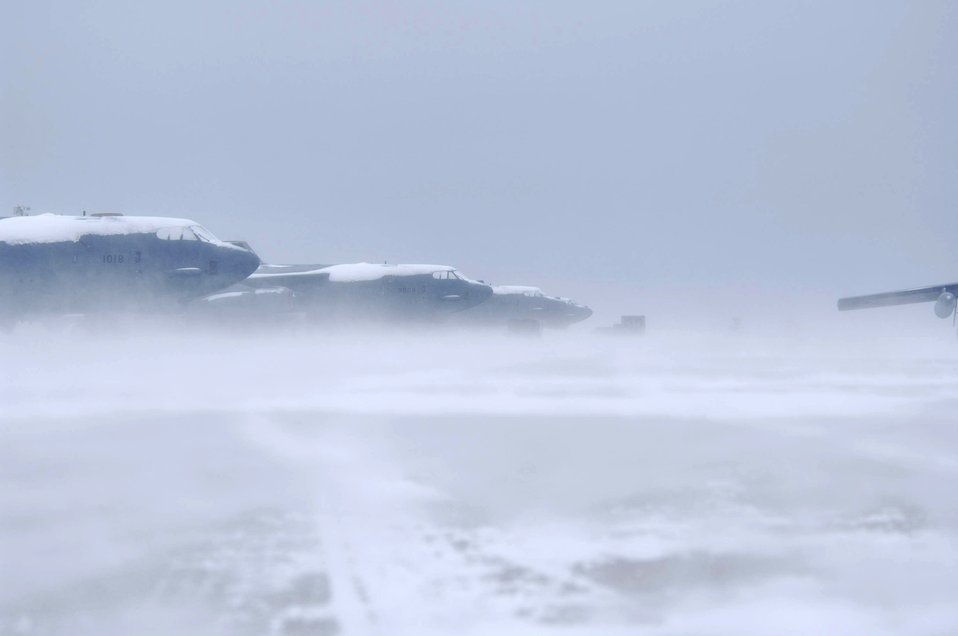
Enduring the cold

A group of B-52 Stratofortress sits on the flightline during low visibility Jan. 8 at Minot Air Force Base, N.D. The base experienced sub-zero temperatures and gusts of wind up to 50 mph.